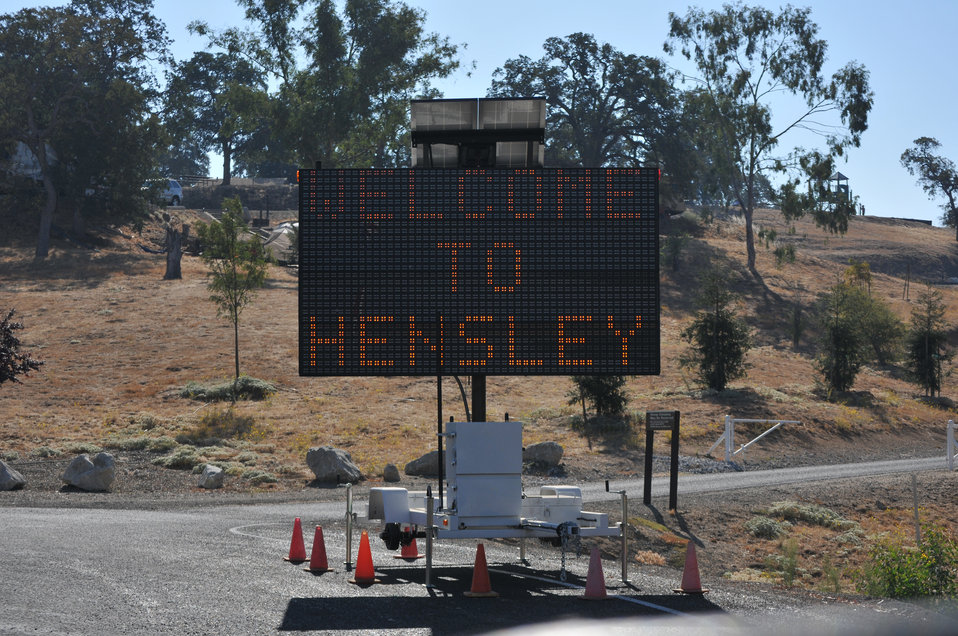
HENSLEY LAKE, Calif. (Sept. 25, 2010) – Hensley Lake’s electronic safety message board welcomes volunteers to the park’s National Public Lands Day observance here Sept. 25. More than 110 volunteers helped Hensley staff remove litter, repair trail erosion, clean the swimming beach and paint and clean signs throughout the park.